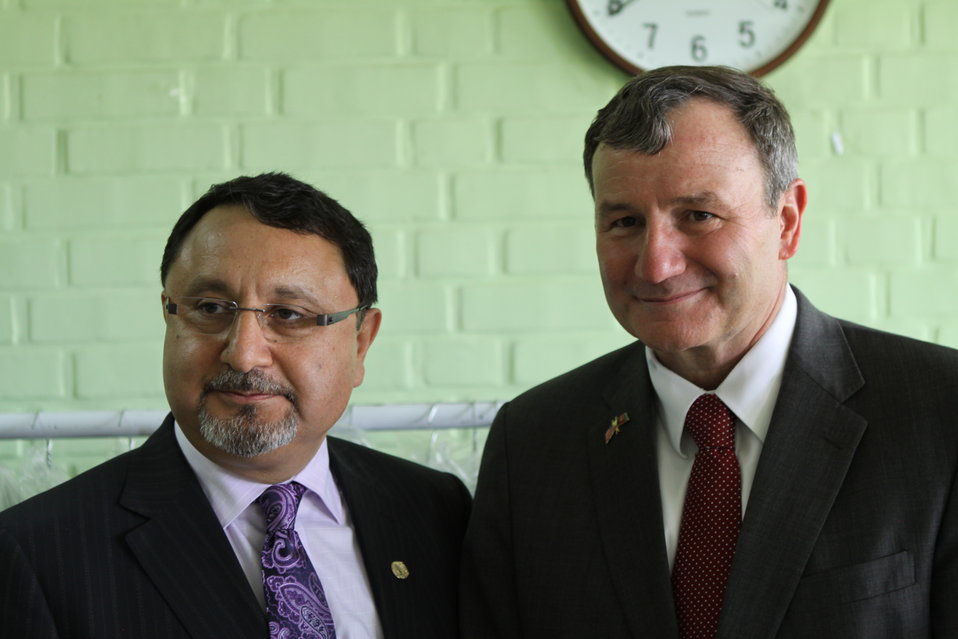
100526 AUAF Graduation 349